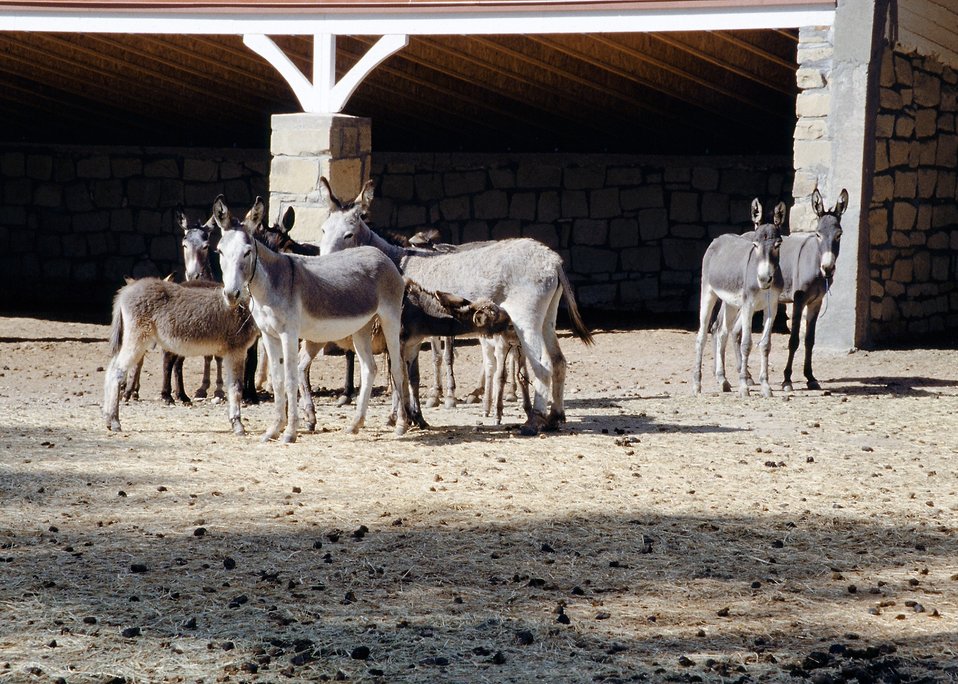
Wild Burrows Pen